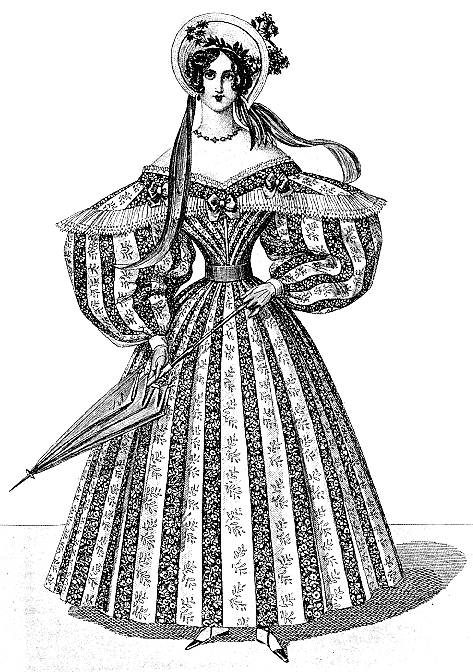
1835-Wiener-Zeitschrift-fashion-plate